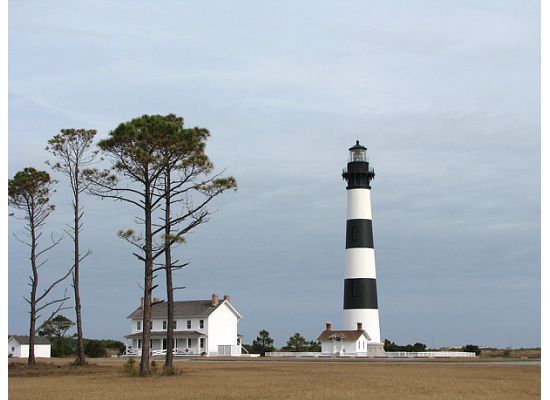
Bodie Island Lighthouse in the Outer Banks.